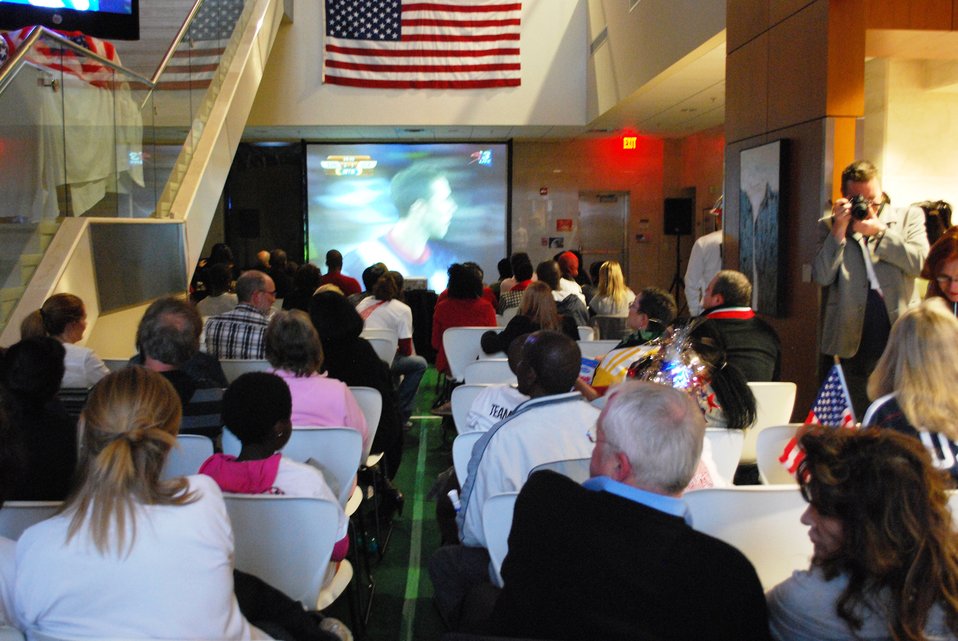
American and South African Fans Cheer at Viewing Party

American and South African fans cheer on the U.S. Men's National Soccer Team at a viewing party for the World Cup match between the United States and Slovenia at the U.S. Consulate in Johannesburg, South Africa, June 18, 2010.